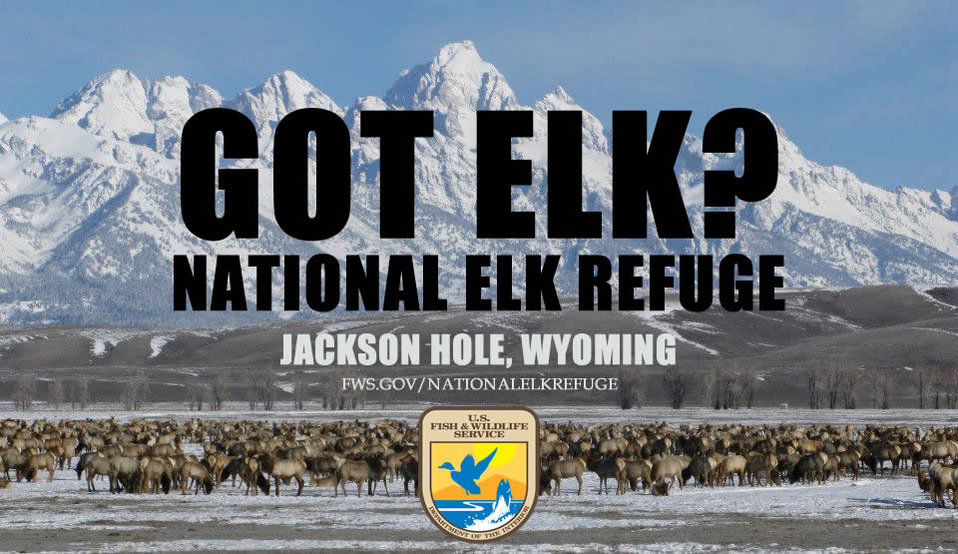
GOT ELK?